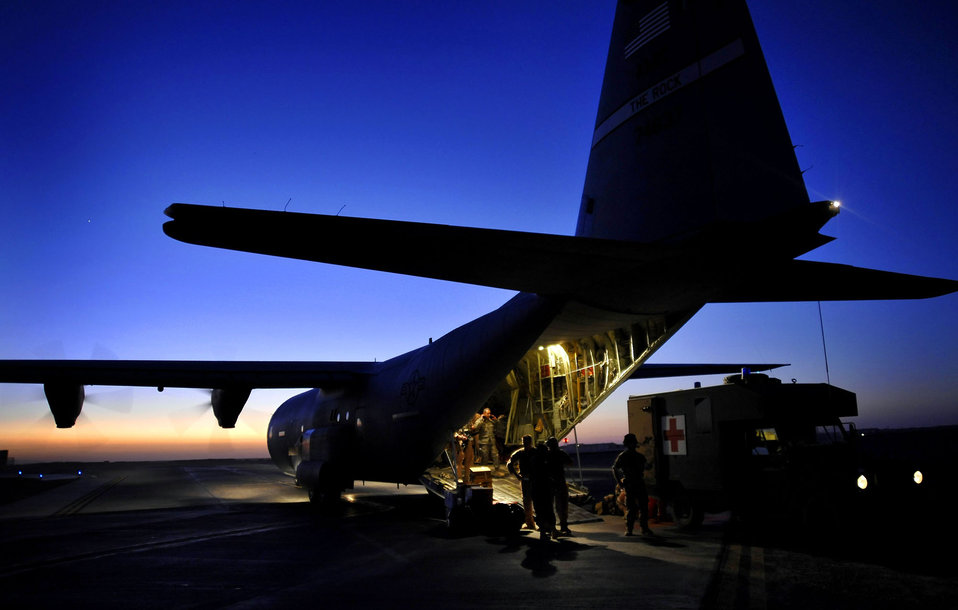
Medical Evacuation

Airmen prepare an HC-130 Hercules to perform a routine channel flight Oct. 6, 2009. During the sortie the team will fly across Afghanistan to connect U.S., coalition and local patients with needed medical care. These Airmen are assigned to the 451st Aeromedical Squadron at Kandahar Airfield, Afghanistan.